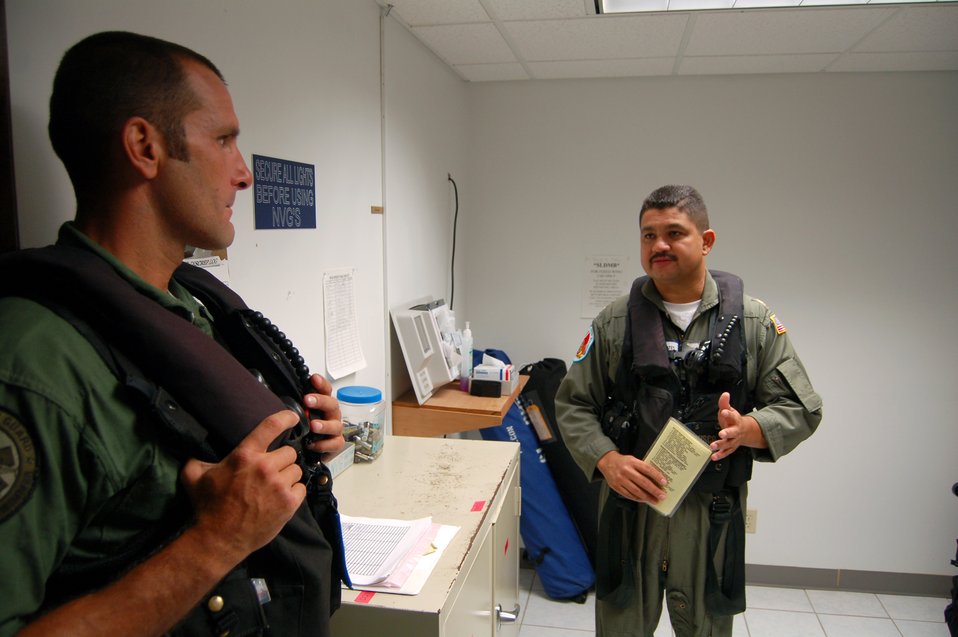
Coast Guard pilot traces roots to Air Force education opportunities

Coast Guard Lt. Cmdr. Juan Lopez (right) briefs his aircrew prior to flying an HH-65C Dolphin March 21 from Coast Guard Air Station Borinquen, Puerto Rico. A former Senior Airman, Commander Lopez is an aircraft commander and the assistant operations officer at the air station. The Coast Guard provides a search and rescue capability for 1.2 million square miles around the Caribbean.